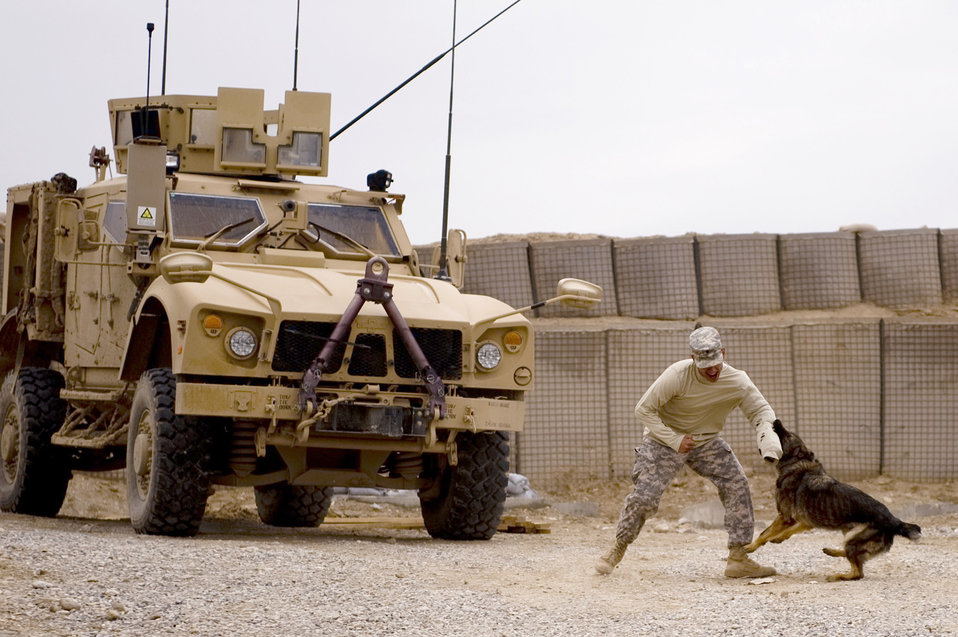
Bringing more bark to fight in Afghanistan

Army Spc. Joseph Lopez runs through a challenge drill with Edy Feb. 18, 2011, at Forward Operating Base Lagman, Afghanistan. Specialist Lopez is a military working dog handler, and Edy is a military working and patrol explosive detection dog assigned to Combined Team Zabul, Afghanistan. The team is composed of working dogs and dog handlers from the Air Force, Army and Navy who help support the various units at FOB Lagman during patrols and other various missions.